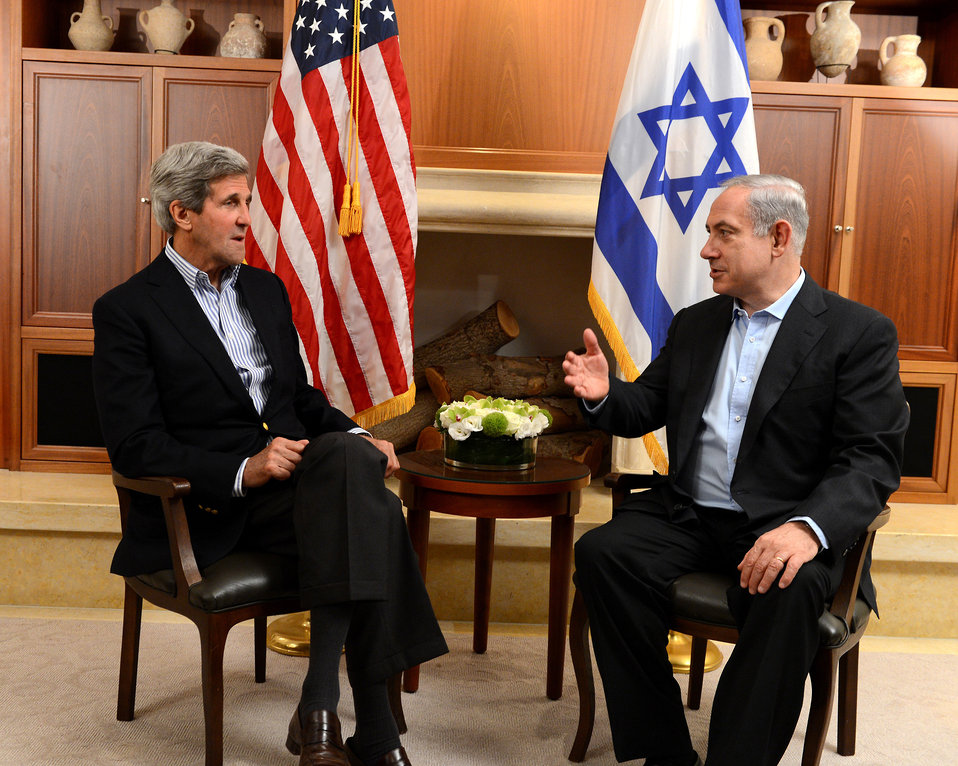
Secretary Kerry Meets With Israeli Prime Minister Netanyahu

U.S. Secretary of State John Kerry sits with Israeli Prime Minister Benjamin Netanyahu before the two began a working dinner in Jerusalem on June 27, 2013.